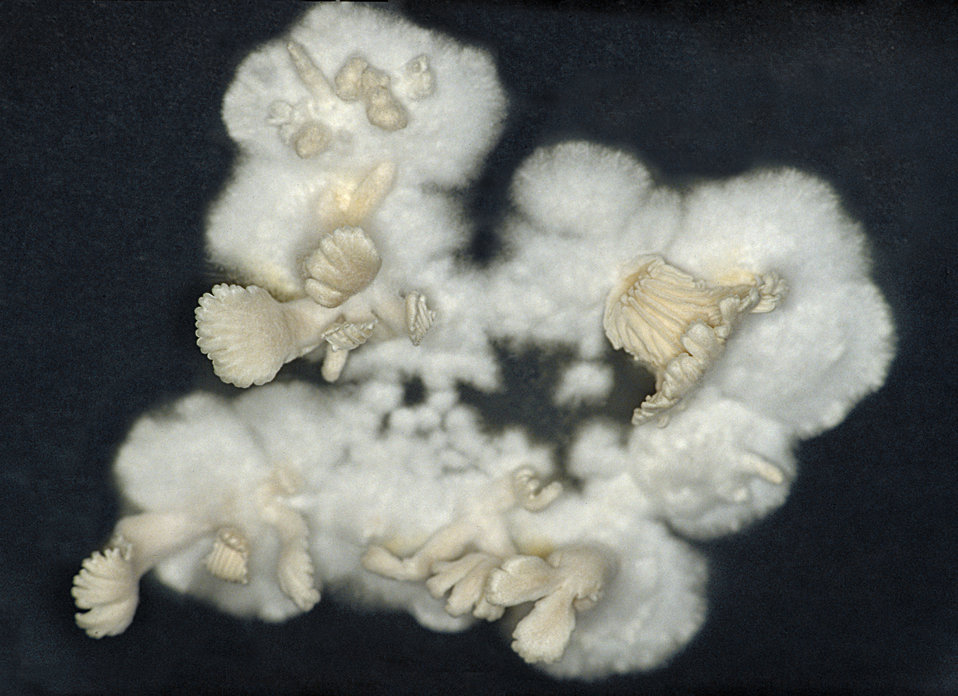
Culture of a basidiomycete showing sexual reproductive structures called basidiocarps. See PHIL 10891 and 10892, for a photomicrograph revealing the presence of S. commune in a tissue sample.